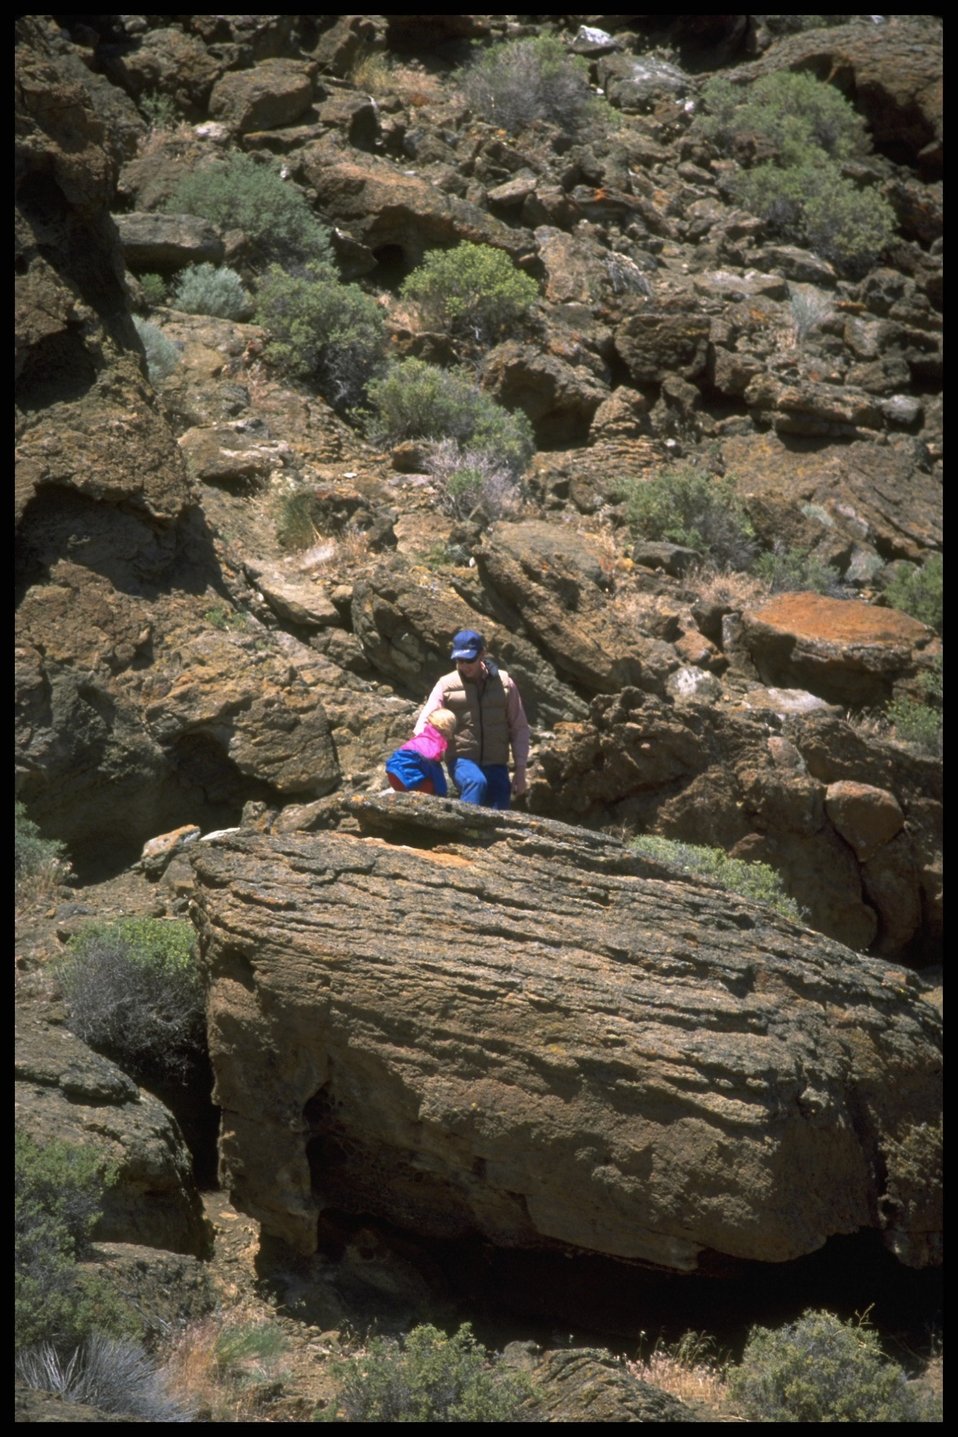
Parent and child at Ft. Rock, Lakeview District.